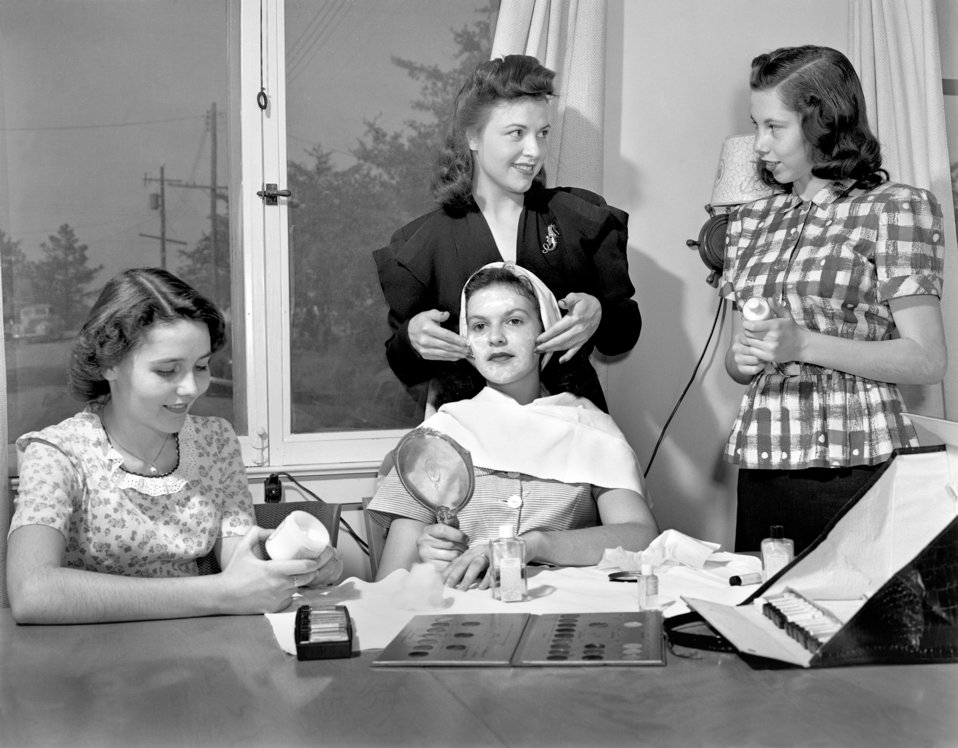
Charm School Oak Ridge 1947

3421-3 DOE photo Ed Westcott 4-23-1947 Mrs. G.G. Downing showing L to R Nancy Lee Gaither, Betty Ann Riley, Peggy Holsopple Oak Ridge Tennessee